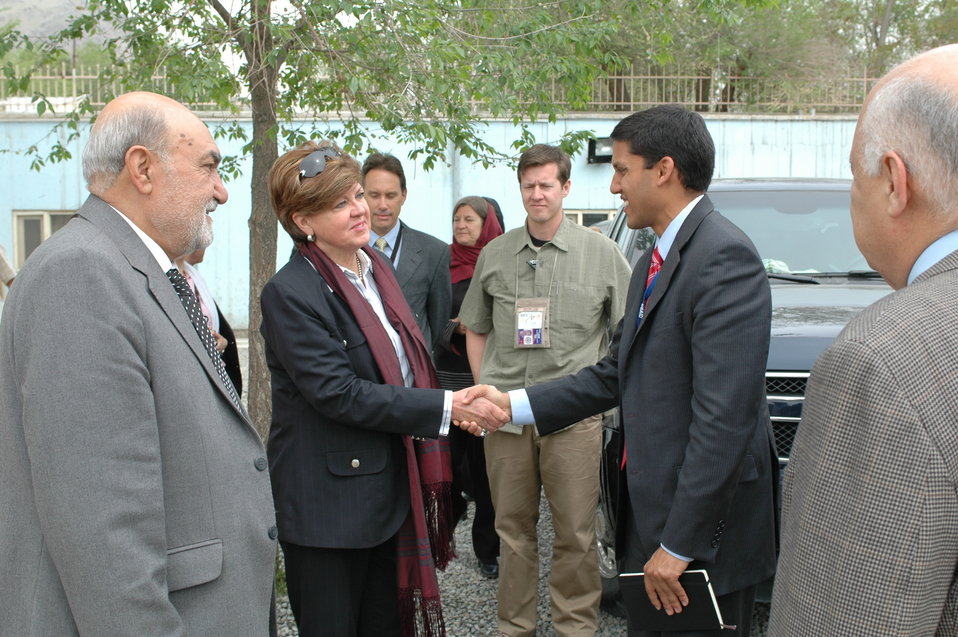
Dr Shah Visits Votech in Kabul